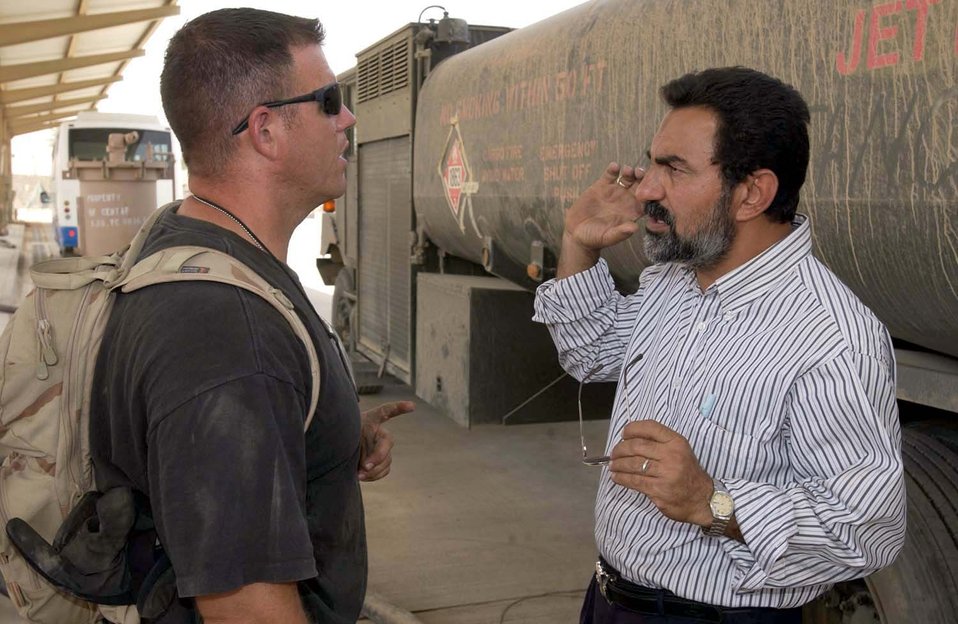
Gas 'em up

BAGHDAD, Iraq -- Staff Sgt. William Jones, a fuels journeyman assigned to the 447th Air Expeditionary Group, discusses procedures for pumping fuel into the fuel truck with a local here. The Iraqi fuel farm is being used by the Air Force.